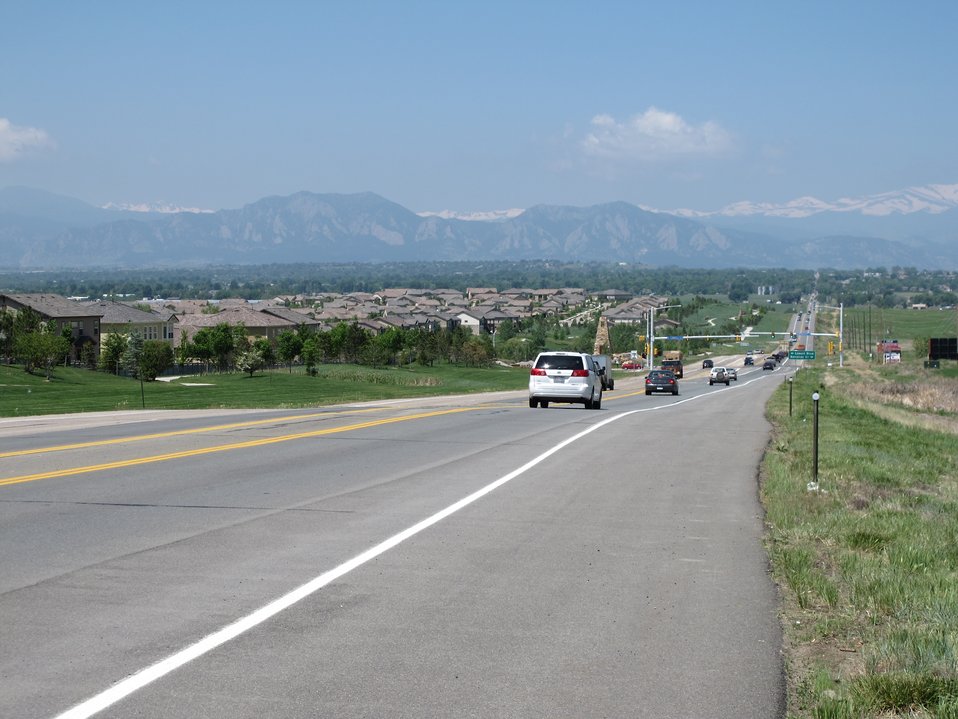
The mountains appear looming over the plains. Greenery is evident everywhere as opposed to the semi-arid plains of eastern Colorado. The Front Range of the Rocky Mountains and the Flatirons loom ahead as Boulder, Colorado is approached from the east.